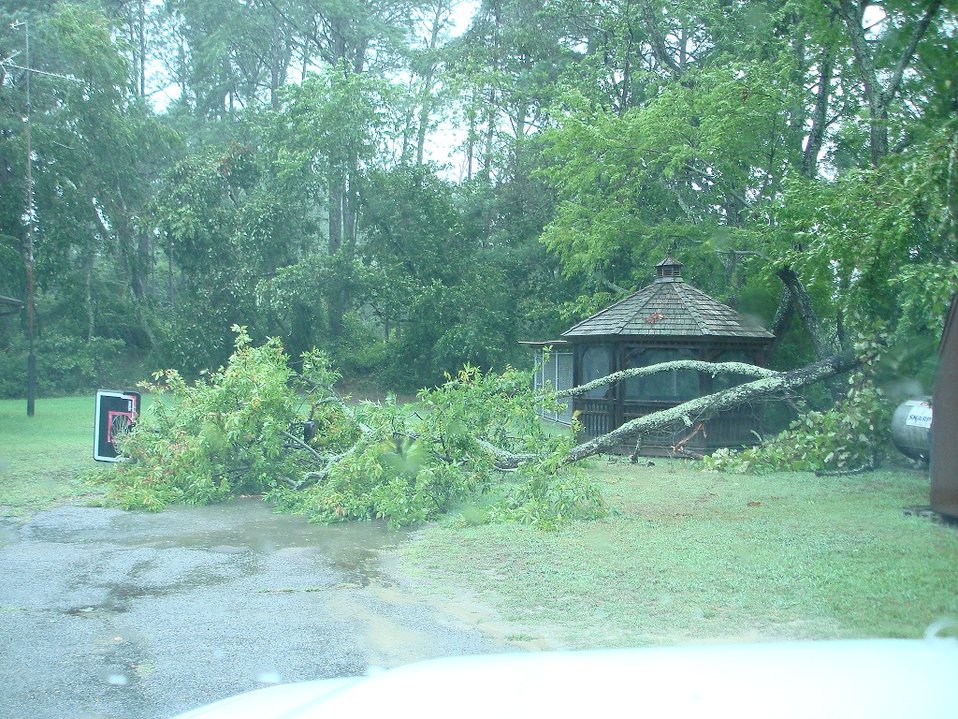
Trees down and debris at refuge housing.

Destruction at Chincoteague National Wildlife Refuge in Virginia caused by Hurricane Irene.